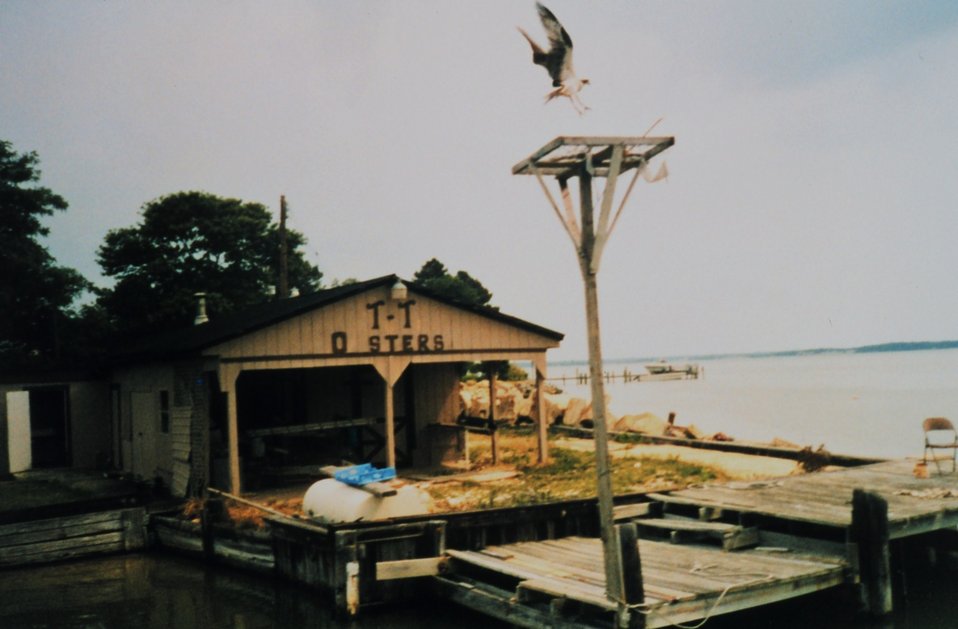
An osprey - Pandion haliaetus - landing on a nesting platform on St. George's Island.